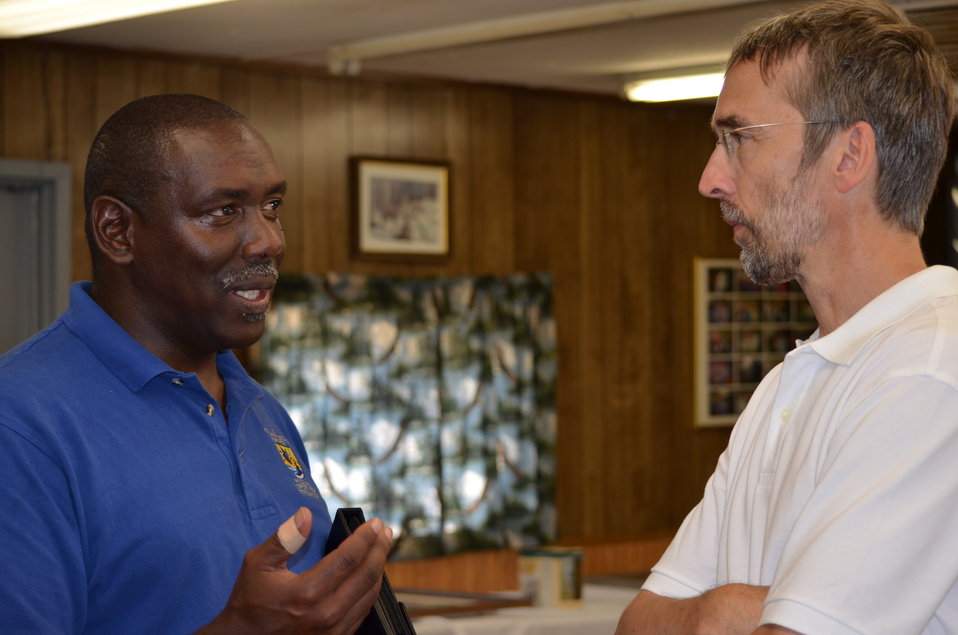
Jerome Ford, AD Migratory Birds, and wildlife artist Joe Hautman.